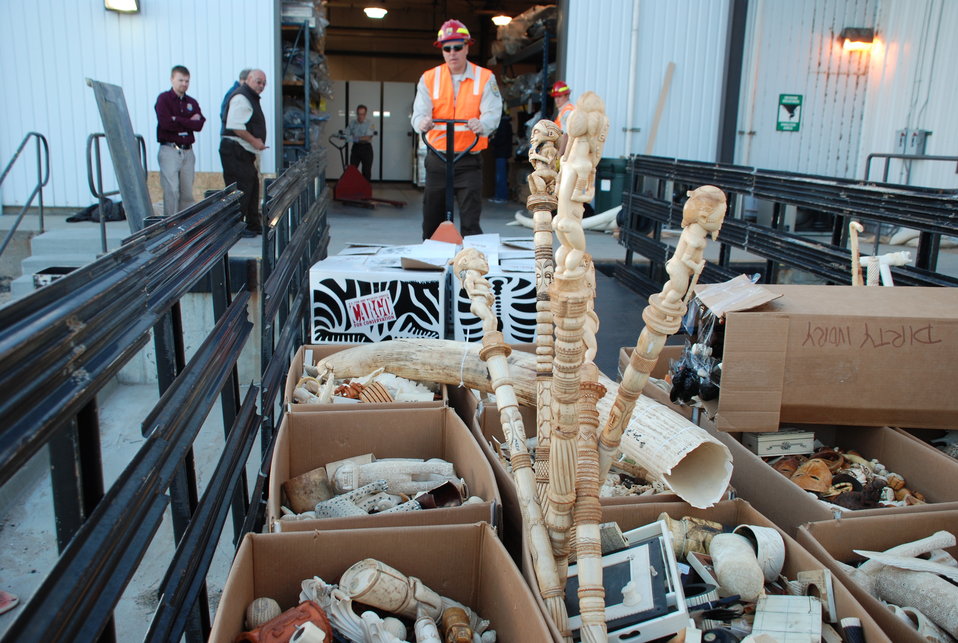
Before sunrise crews began loading ivory which FWS seized during undercover investigations of organized smuggling operations or confiscating at the U.S. border over the past 25 years.